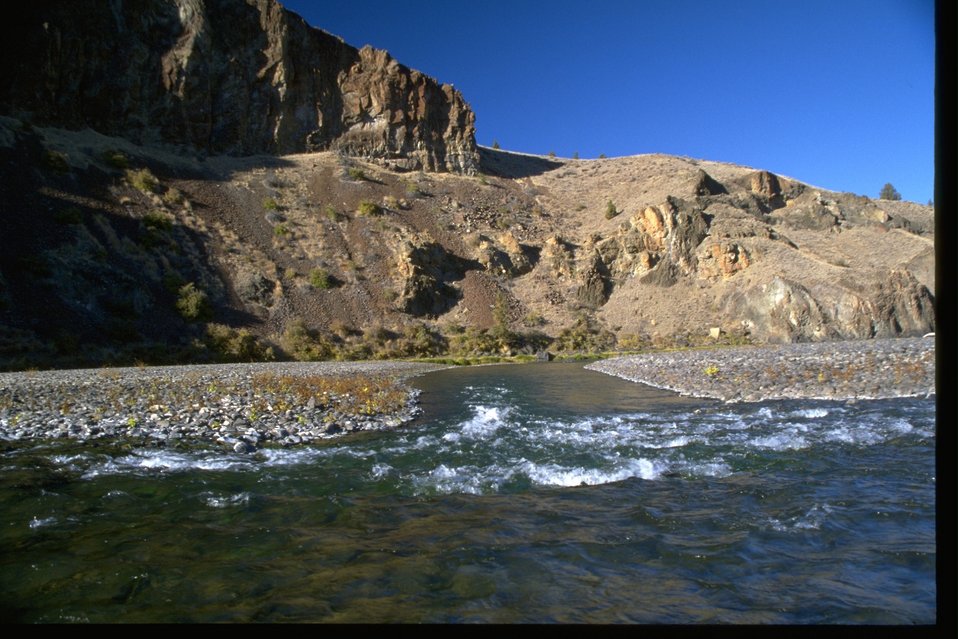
Ripids in low water moving at 350 cfs in the John Day River.